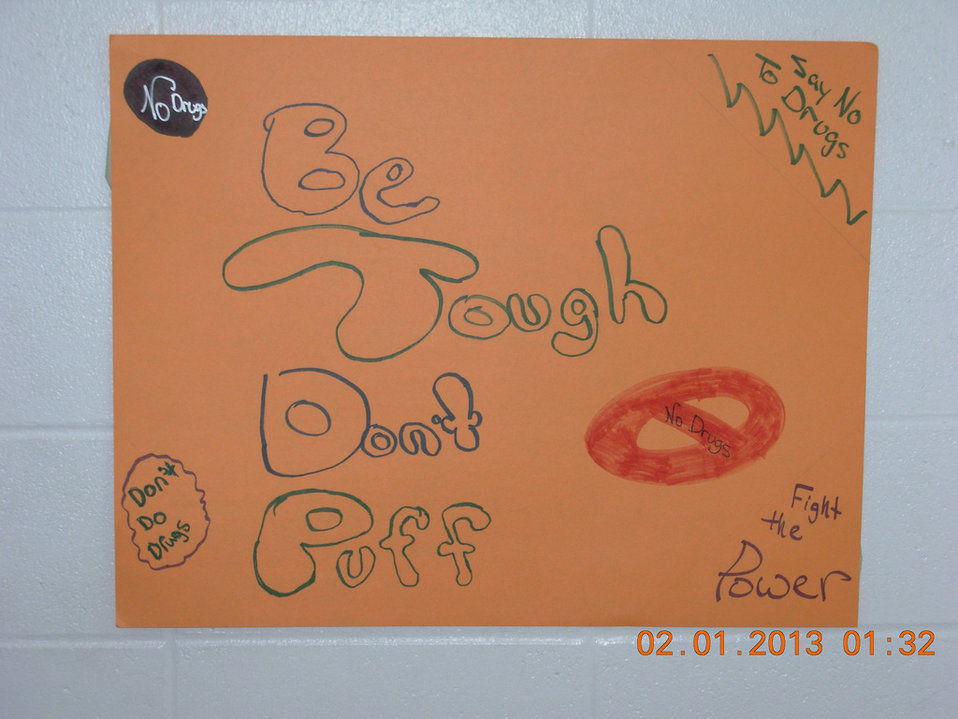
Iowa's SAFE Coalition, NDFW 2013

Van Buren County, IA. SAFE Coalition high school student run groups fighting issues of drug, alcohol, and tobacco abuse during NDFW 2013.